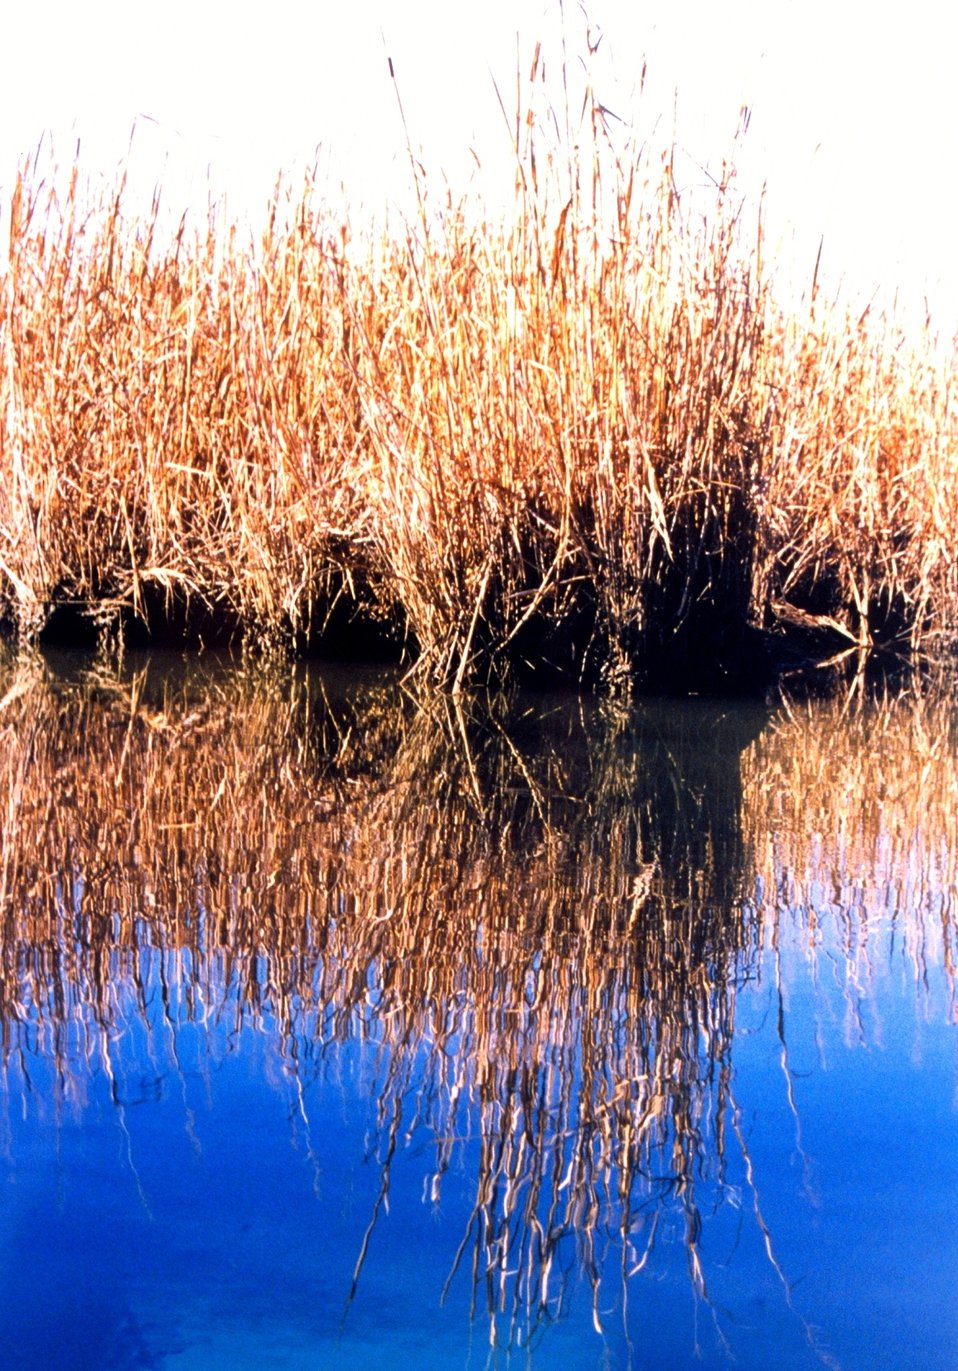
Reflections of a Patuxent River marsh.